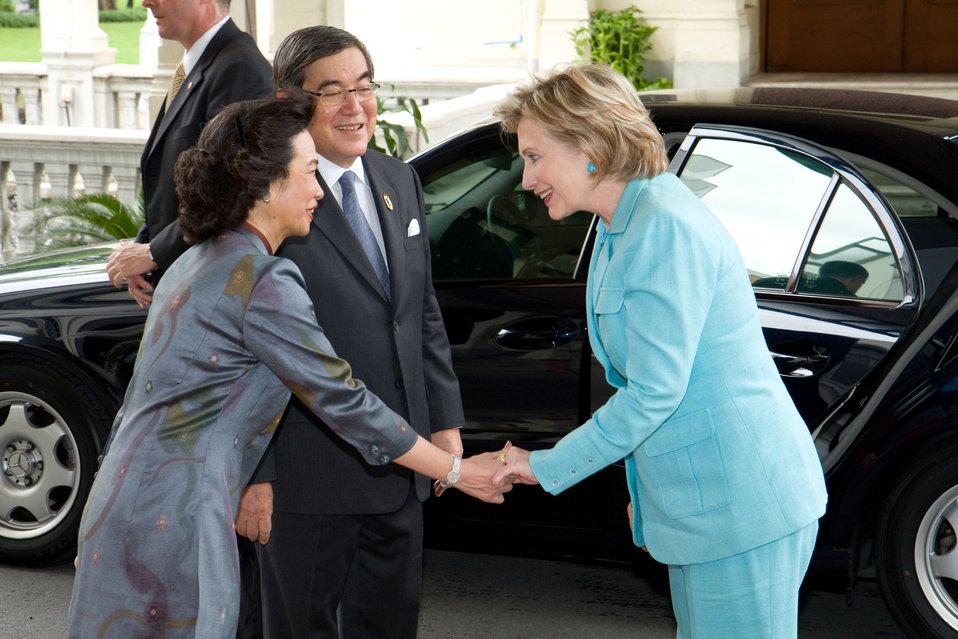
Secretary Clinton Visits Phyathai Palace

U.S. Secretary of State Hillary Rodham Clinton is greeted by Mrs. Sumuntana Mokkhaves at Phyathai Palace in Bangkok, Thailand July 22, 2009.